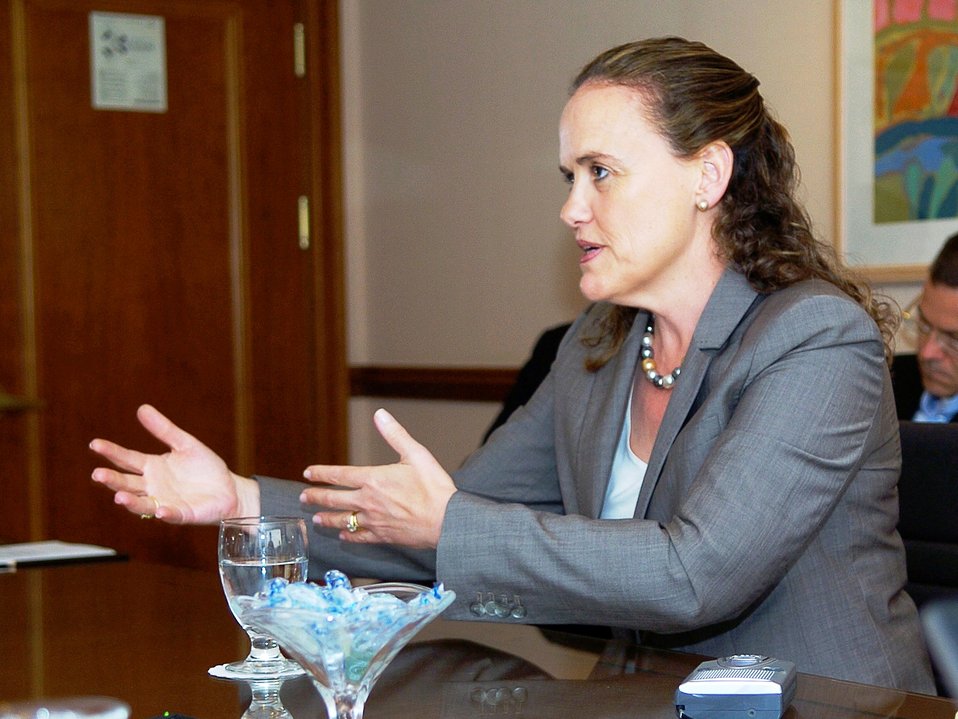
Under Secretary of Defense Michele Flournoy Briefs the Press

Under Secretary of Defense for Policy Michele Flournoy briefs the press at the U.S. Embassy in Tel Aviv, Israel, on June 23, 2010.